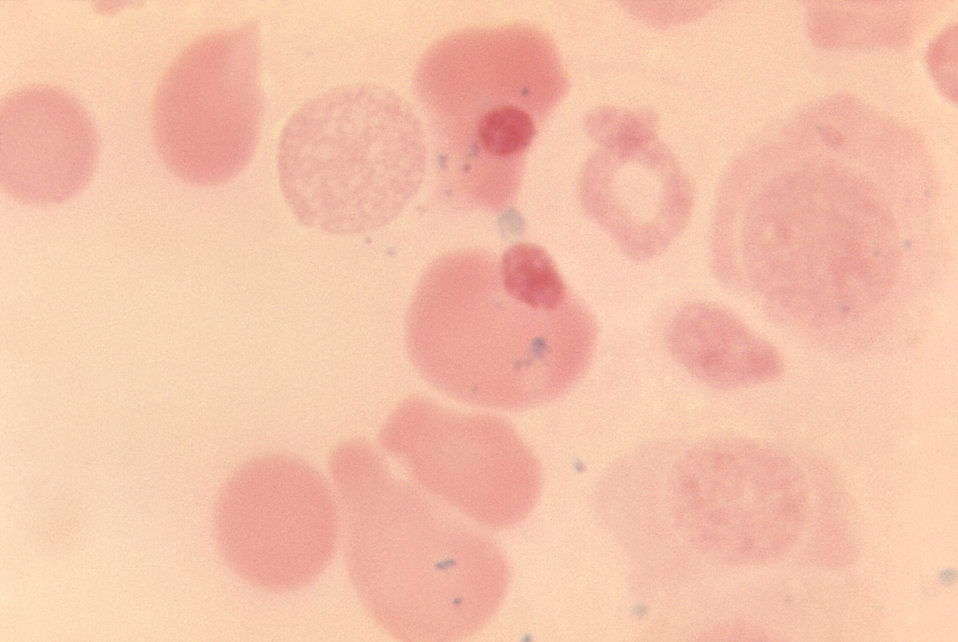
Stained using a PAS technique, along with a H&E counterstain, this highly-magnified photomicrograph revealed the cytomorphologic details displayed by a number of normal sideroblasts. Sideroblasts are actually immature red blood cells, or RBCs, which contain ferritin granules within their cytoplasmic interior.